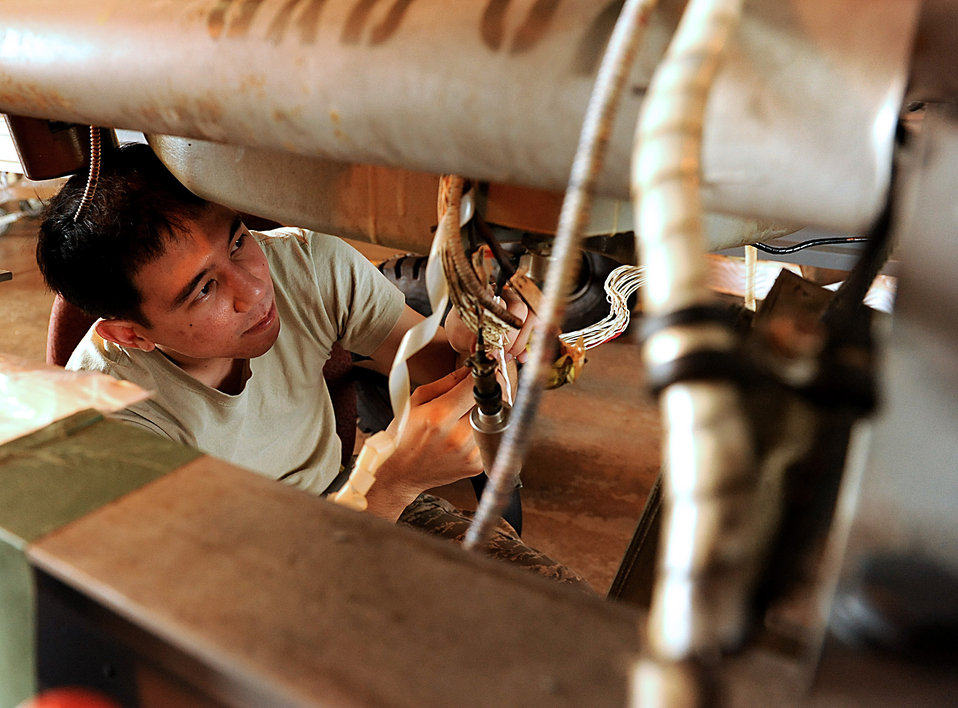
Keeping it clean

Airman 1st Class Stephen Blackhall cleans and inspects wires for corrosion under the gearbox of an HH-60G Pave Hawk Nov. 2, 2011, at Kadena Air Base, Japan. The 718th Aircraft Maintenance Squadron recently earned the Air Force Maintenance Effectiveness Award for effective management of its resources and its contributions to the mission. Blackhall is an 718th Aircraft Maintenance Squadron electrical environmentalist.